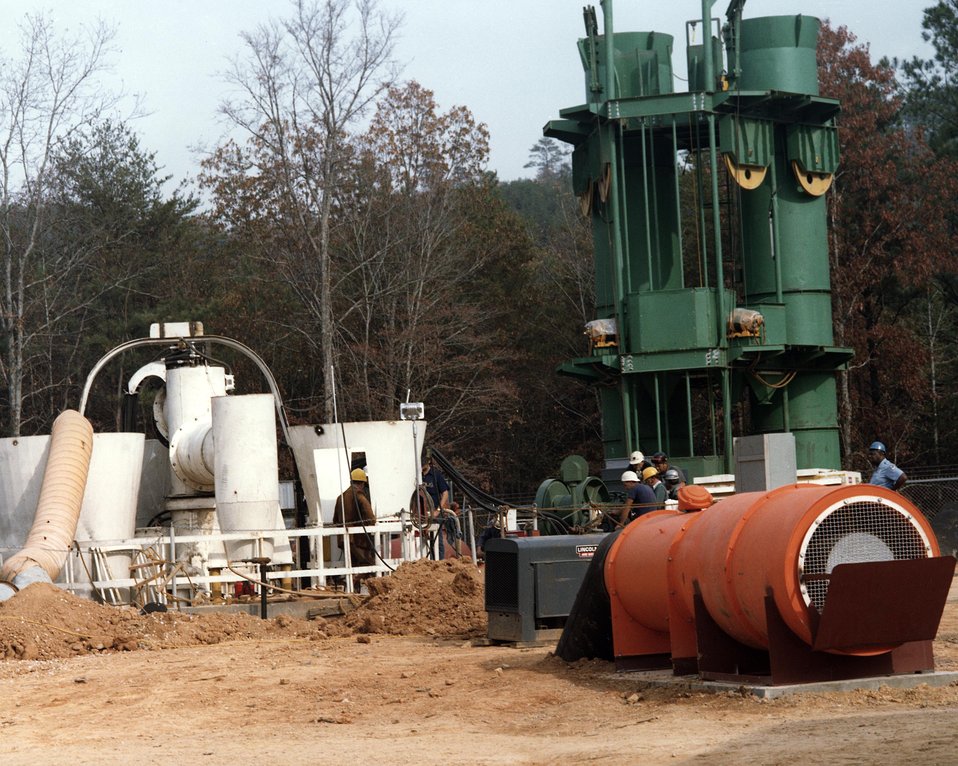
BLIND SHAFT BORER IN THE 47-FOOT DEEP COLLAR (LEFT) AND THE GALLOWAY (RIGHT).

THE DEPARTMENT OF ENERGY'S BLIND SHAFT BORER CONTRACT CALLS FOR THE DEVELOPMENT, MANUFACTURE, AND DEMONSTRATION OF A MACHINE CAPABLE OF VERTICAL DOWNWARD PENETRATION THROUGH ROCK. THIS MACHINE WILL BE USED TO CONSTRUCT THE OAK GROVE NO. 4 INTAKE SHAFT NEAR BIRMINGHAM, ALABAMA. WHEN COMPLETED, THIS SHAFT WILL BE 1160 FT. DEEP. THE BLIND SHAFT BORERIS A NEW CONCEPT FOR BORING VERTICAL COAL MINE SHAFTS. THE BORER MACHINE IS UNIQUE AS IT IS THE ONLY ONE OF ITS TYPE AND SIZE IN THE WORLD, AND IS EXPECTED TO SIGNIFICANTLY REDUCE THE TIME REQUIRED TO DEVELOP NEW COAL MINES. THE MACHINE IS OVER 24 FEET IN DIAMETER, NEARLY 60 FEET HIGH, WEIGHS 350 TONS, AND CAN BORE 40 FEET PER 24-HOUR DAY. THE TOTAL SYSTEM INCORPORATES CONVENTIONAL HOISTING AND CONCRETE LIN- ING EQUIPMENT. THE INITIAL FIELD TRIAL IS AT U.S. STEEL'S OAK GROVE MINE. TESTING STARTED IN EARLY DECEMBER AND CONTINUED INTO THE SPRING OF 1979.